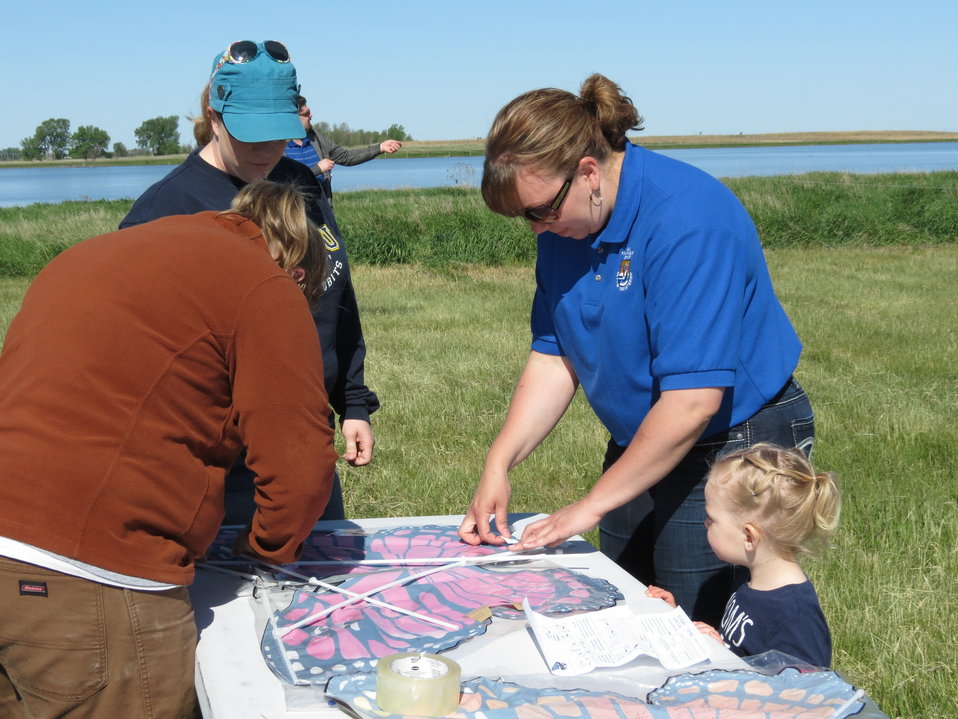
Kites in Flight 2012

More kite building.